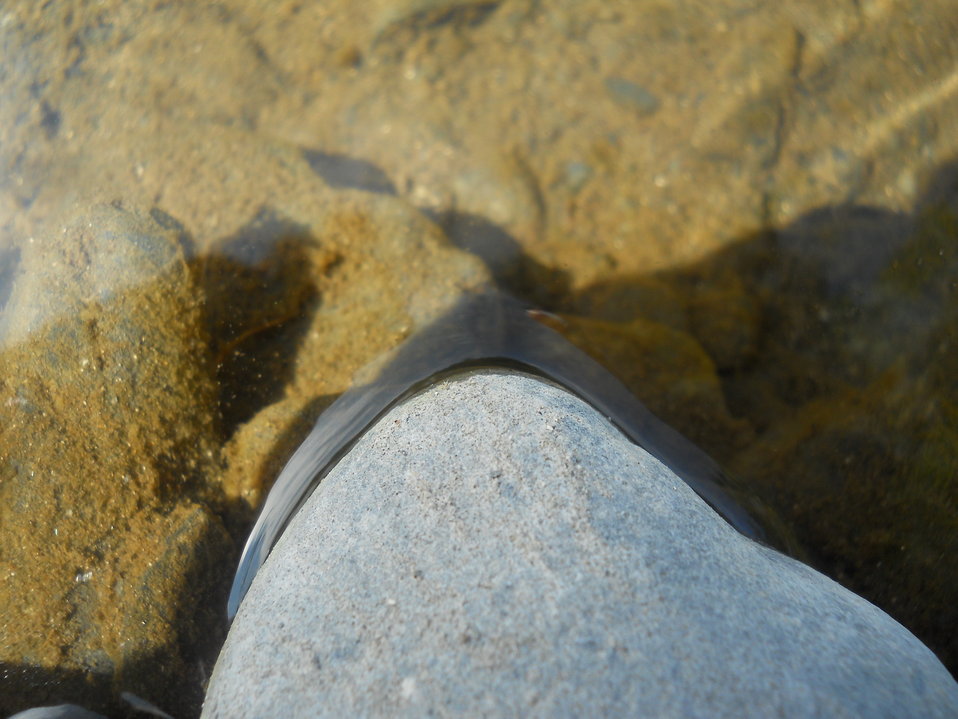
Smooth Around the Edges

Credit: USFWS
Photo taken by a Salmon Camp participant during a nature photography activity.

Source and Contact: Kodiak National Wildlife Refuge